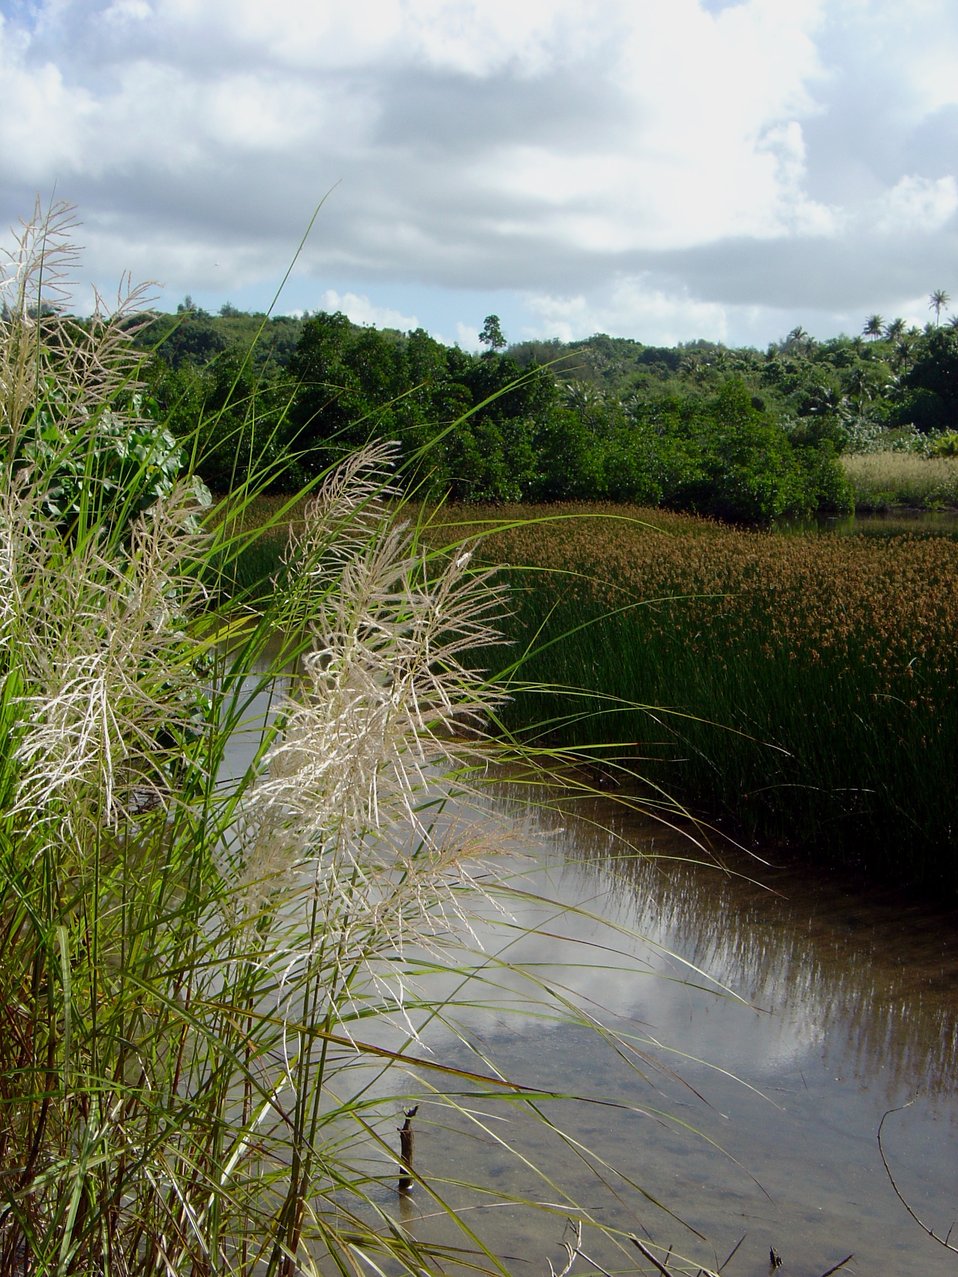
Phragmites marshland in wetlands of Guam.